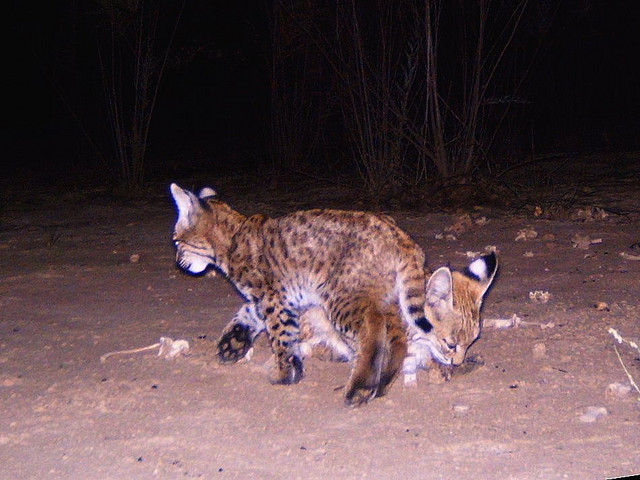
bobcat kittens

Camera trap captures young bobcats' explorations
Bosque del Apache National Wildlife Refuge, NM